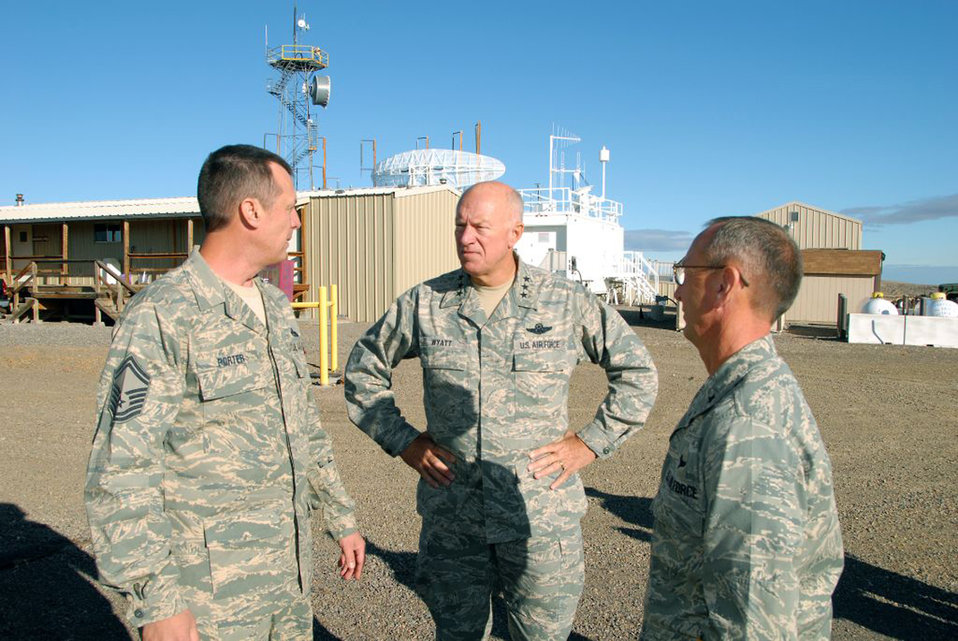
Gen. Wyatt: Maintainers must look beyond the future

Lt. Gen. Harry M. Wyatt III (center) talks with Senior Master Sgt. Robert Porter (left) and Brig. Gen. Gary Sayler during a visit Oct. 15, 2009, to the 266th Range Squadron, a geographically separated unit about 100 miles from Boise, Idaho, in the Owyhee Desert. General Wyatt, the director of the Air National Guard, was in Boise for the ANG Maintenance Group Mega-Conference Oct. 15, 2009.